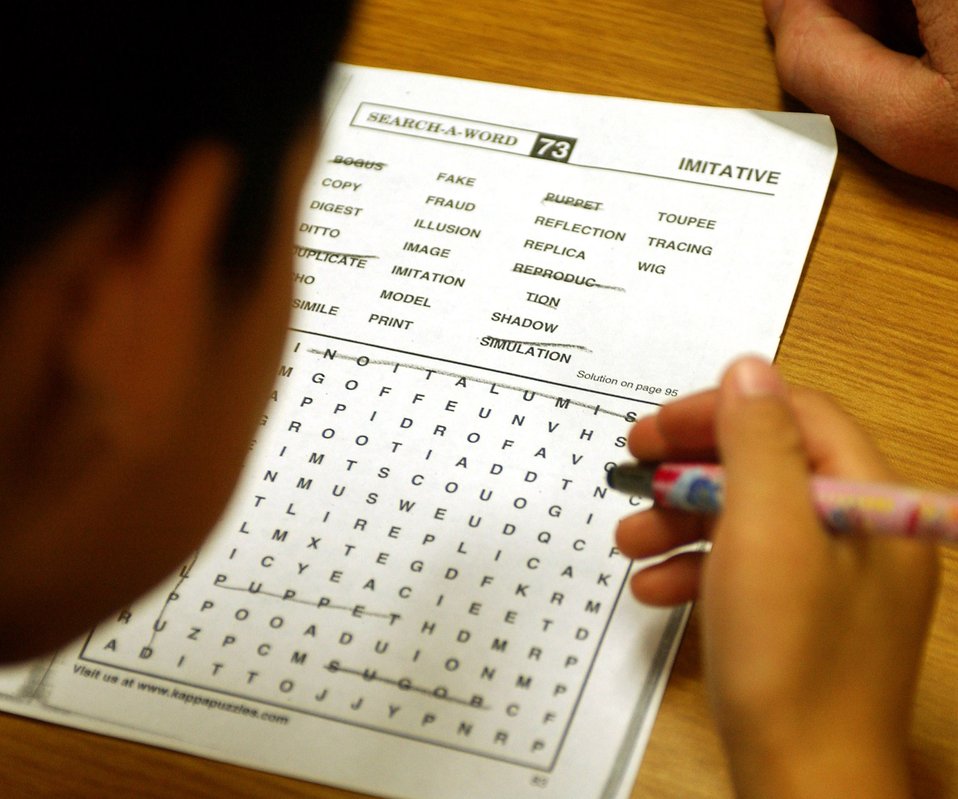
Good neighbors

A child searches for a word during his English class at the Gunsan Orphanage Sept. 5 at Gunsan City, South Korea. Members of the 8th Logistics Readiness Squadron volunteered at the Kunsan Air Base Commissary in South Korea to raise money for the children at the Gunsan Orphanage as part of a Good Neighbor Program initiative. After presenting the money, they spent time with the children.